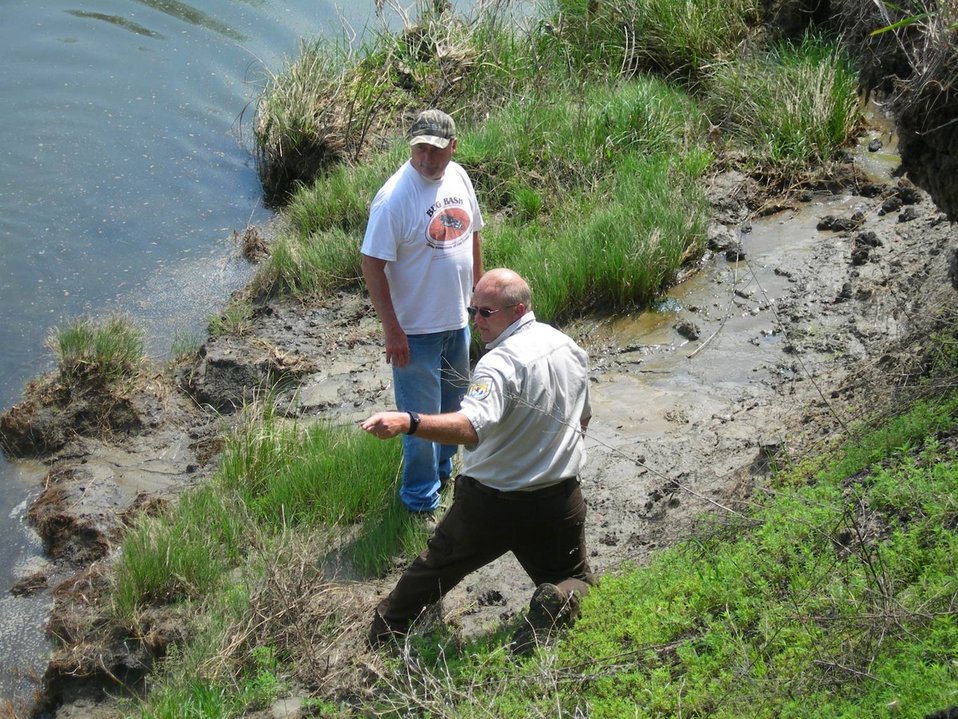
Larvae Translocation

Robert Harms, a U.S. Fish and Wildlife Service biologist who’s worked to recover the Salt Creek tiger beetle for almost a decade, discusses the suitability of habitat for reintroduction of larvae with Steve Spomer, Entomologist from the University of Nebraska at Lincoln.